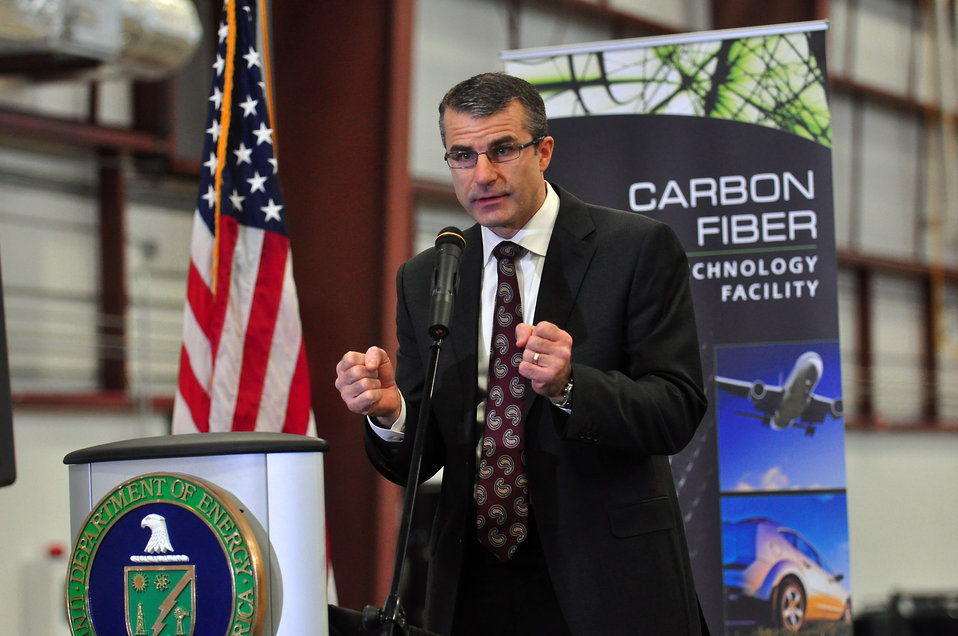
Carbon Fiber Technology Facilty Open House Oak Ridge Tennessee

13-025 DOE photo Lynn Freeny